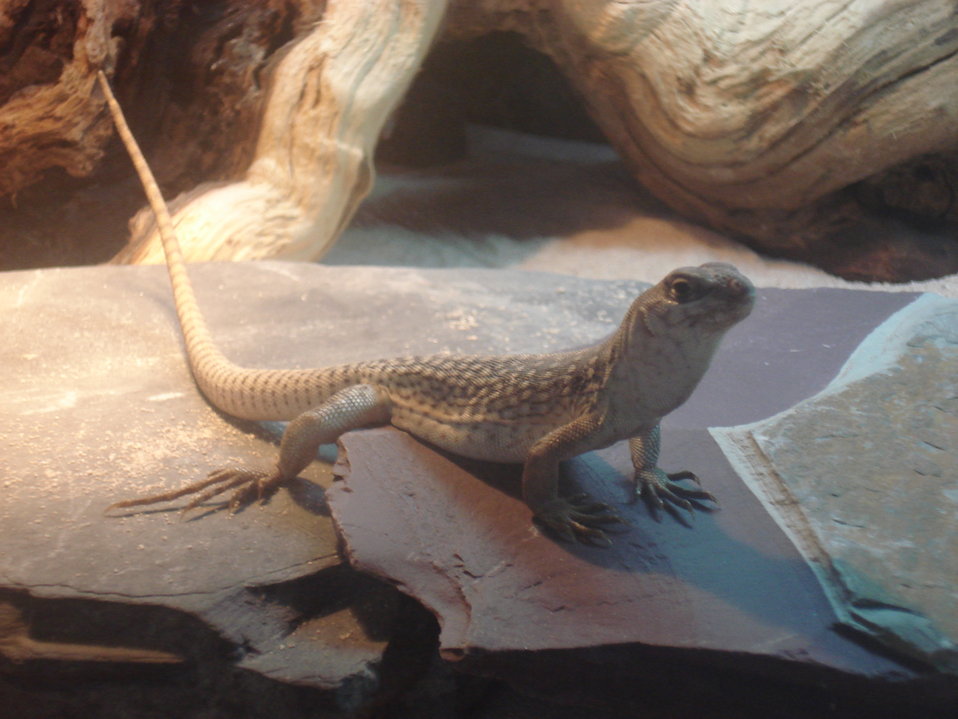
Photo taken by Scott Fitzpatrick (me) Sept. 2/2006